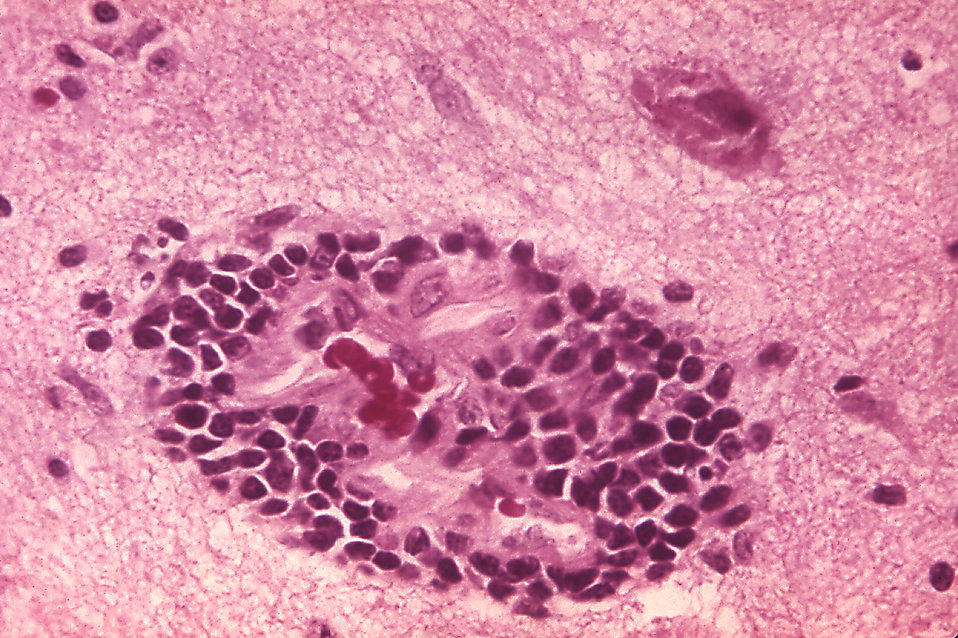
This micrograph depicts the histopathologic changes associated with rabies encephalitis prepared using an H&E stain.